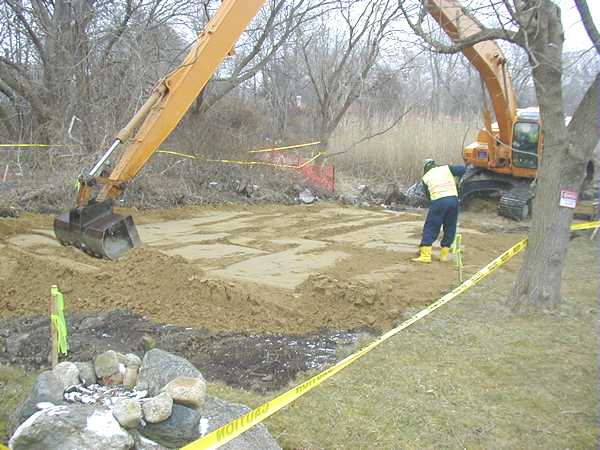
March 2001, Placing clean soil in an excavated backyard

Cleanup crews carefully restored backyards to original, but clean, conditions following Polychlorinated Biphenyl (PCB) removal action in New Bedford Harbor. .